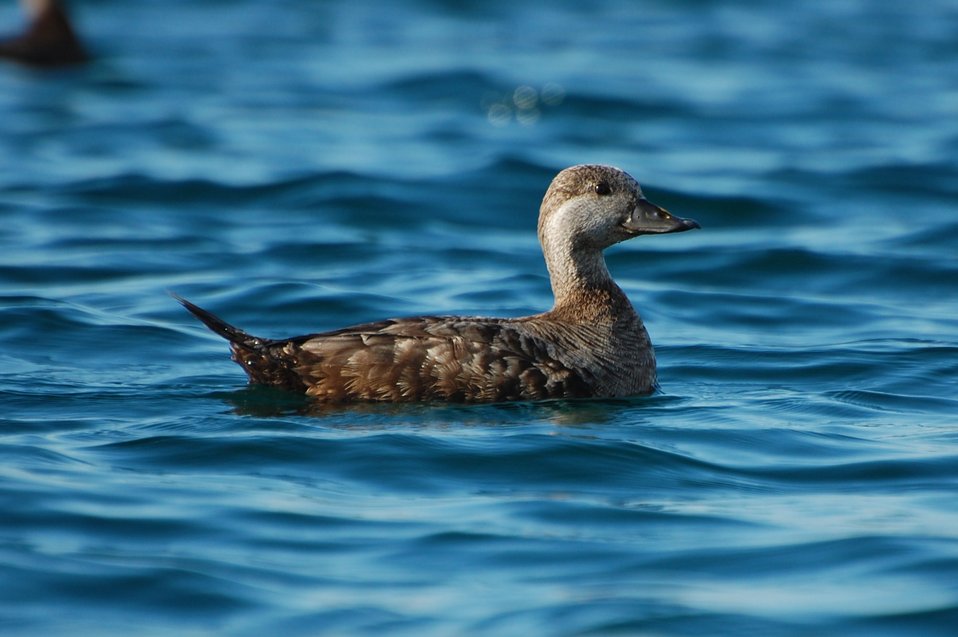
Black Scoter, Izembek National Wildlife Refuge